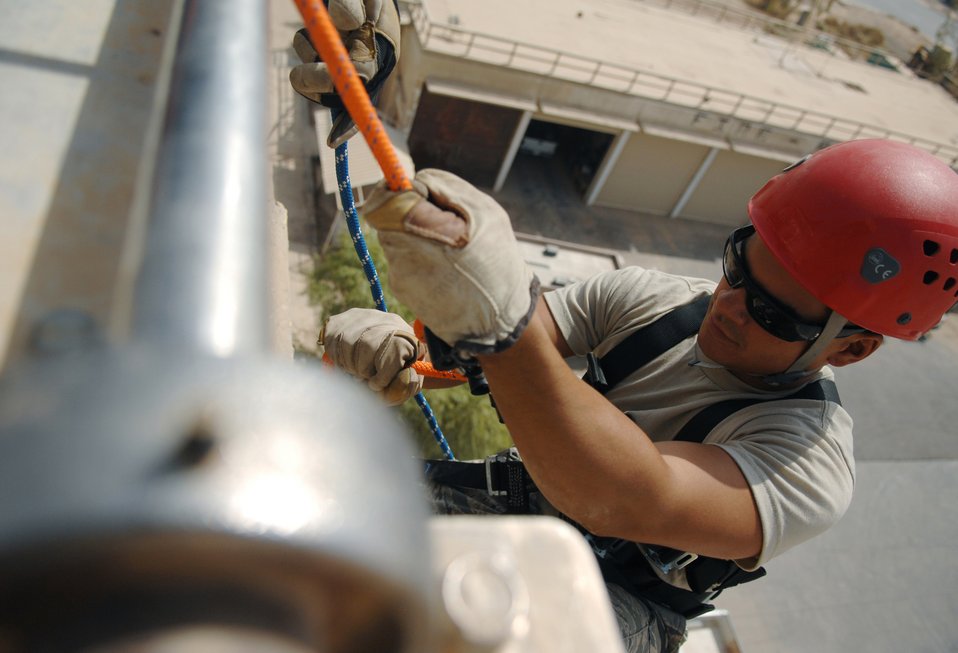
Balad firefighters rappel tower

Airman 1st Class Hector Garcia, a firefighter with the 332nd Expeditionary Civil Engineer Squadron, prepares to rappel down the side of the control tower during a training exercise Aug. 20, 2009, at Joint Base Balad, Iraq.